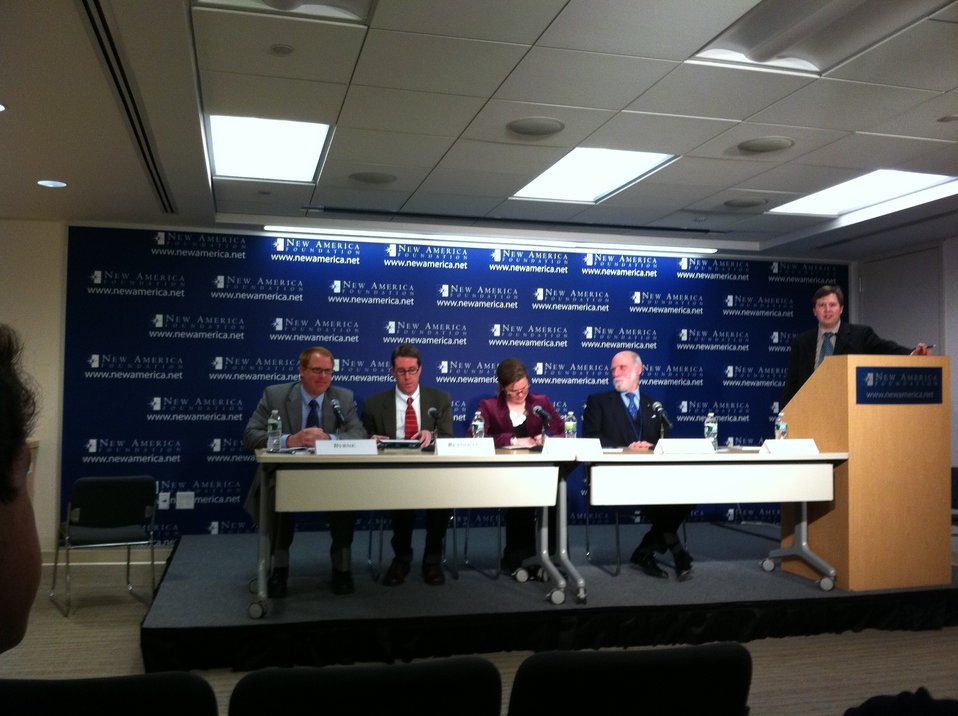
More Than a Broadband Map

GIS expert Mike Byrne joins Vint Cerf and others at the More Than a Broadband Map event at the New America Foundation. March 23, 2011